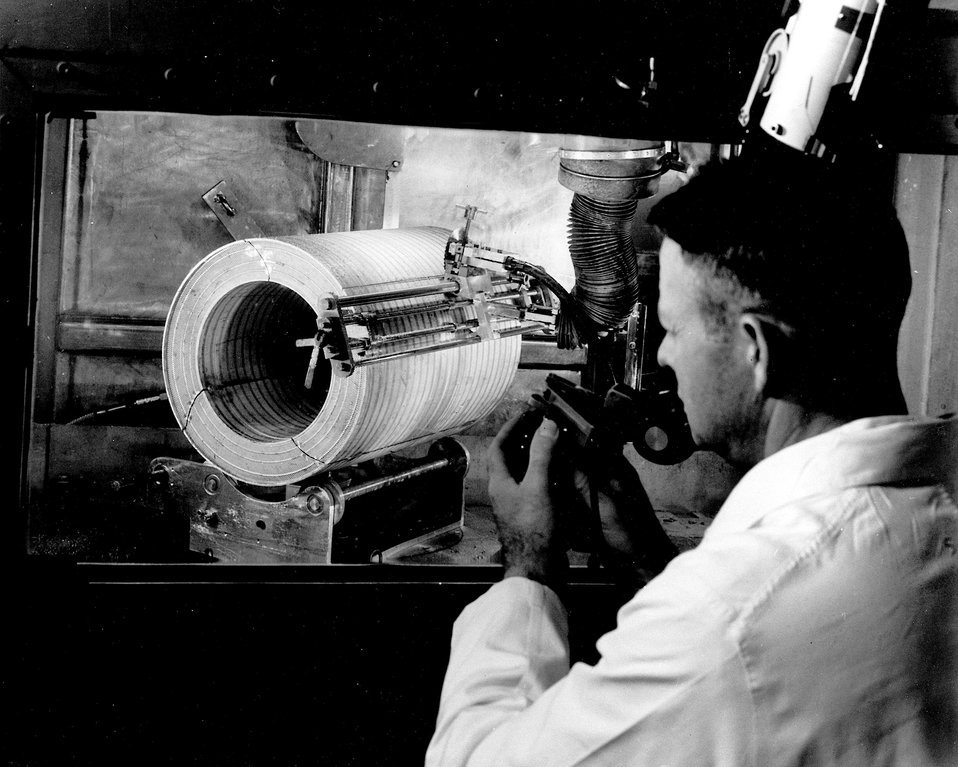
High Flux Isotope Reactor fuel unit after depletion in the reactor. This unit is being examined at the High Radiation Level Examination Laboratory for any radiation damage incurred during its use in the reactor. c. 1970